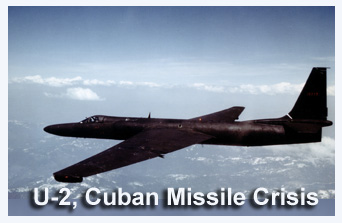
U-2

The U-2 made its first flight in August 1955. In October, the U-2 photographed the Soviet military installing offensive missiles in Cuba.